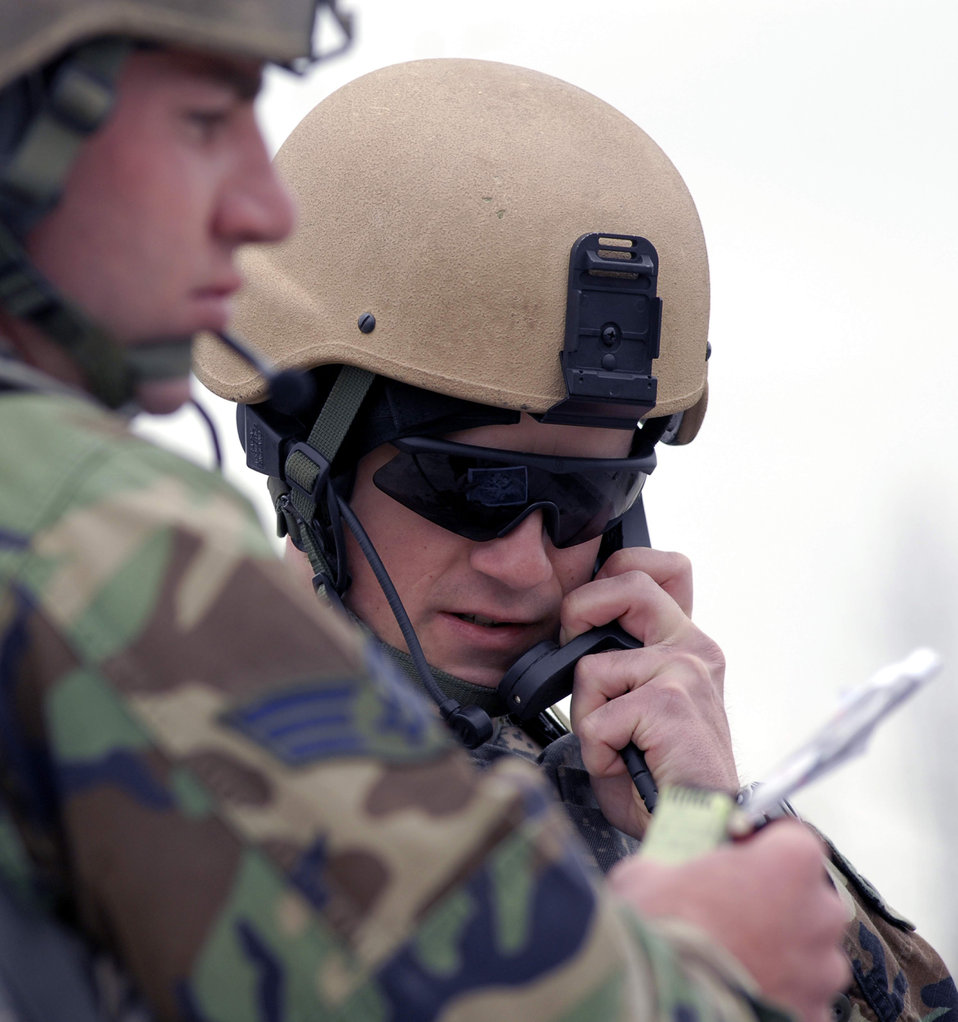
Patriot 7 course combines ISR with mission

Airmen in the Patriot 7 course at Fort Pickett, Va, call in air support from F-15E Strike Eagles circling overhead during an exercise. The exercise teaches students how to use remote operated video enhanced receiver systems. The five-day course is designed to train Airmen on how to better integrate intelligence, surveillance and reconnaissance tools into their missions.